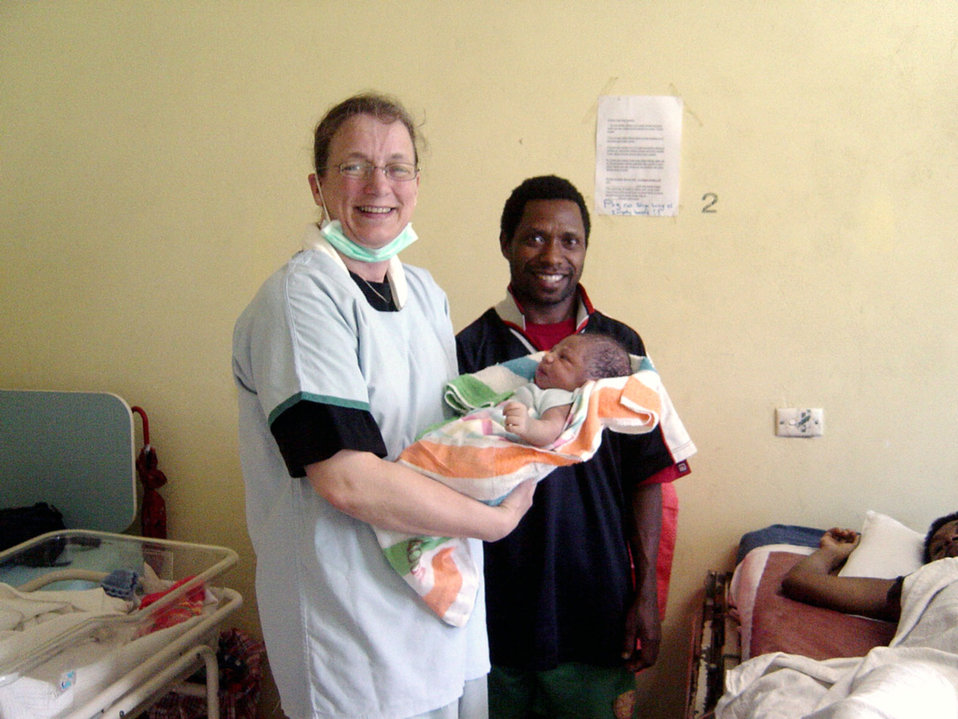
Humanitarian mission impacts team, residents

Capt. Christine Crawford holds a newborn baby July 25 at Espiritu Santo hospital in Vanuatu. Captain Crawford is a general medical surgical nurse assigned to the 3rd Wing from Elmendorf Air Force Base, Alaska. She was part of an obstetrics/gynecological surgical team that visited Espiritu Santo island in the nation of Vanuatu to train medical staff and perform surgery. The team was part of the Oceania Humanitarian Assistance Mission that brought medical, dental and engineering servicemembers to perform civil assistance projects on Vanuatu, Nauru and Kiribati July 20 through 30.